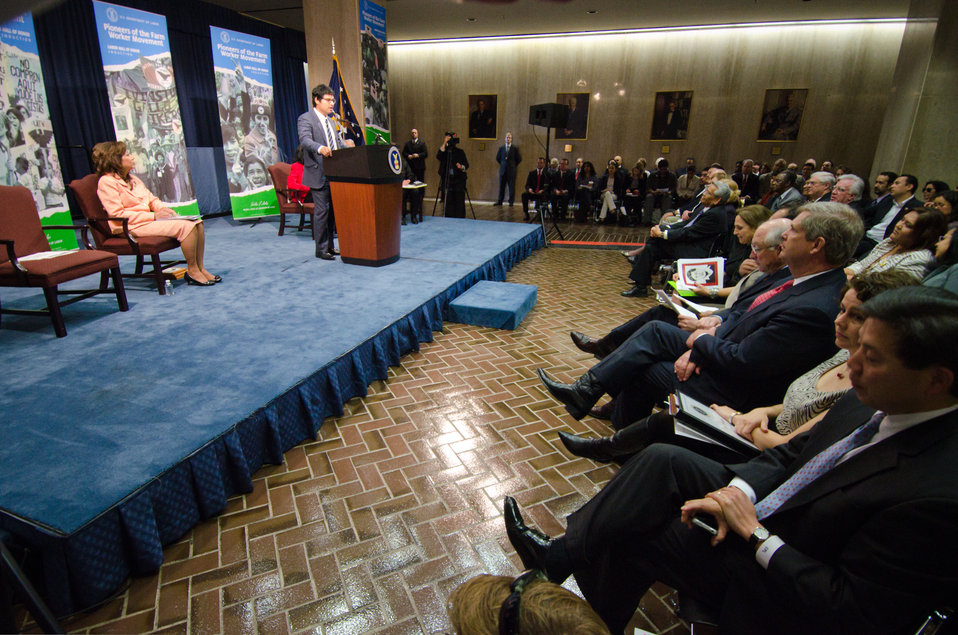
Michael Pena the actor who will be portraying Cesar Chavez in a biography about the farm workers rights activist was the Master of Ceremonies at the dedication of the Cesar E. Chavez Memorial Auditorium at the United States Department of Labor in Washington, D.C., Monday, March 26, 2012.